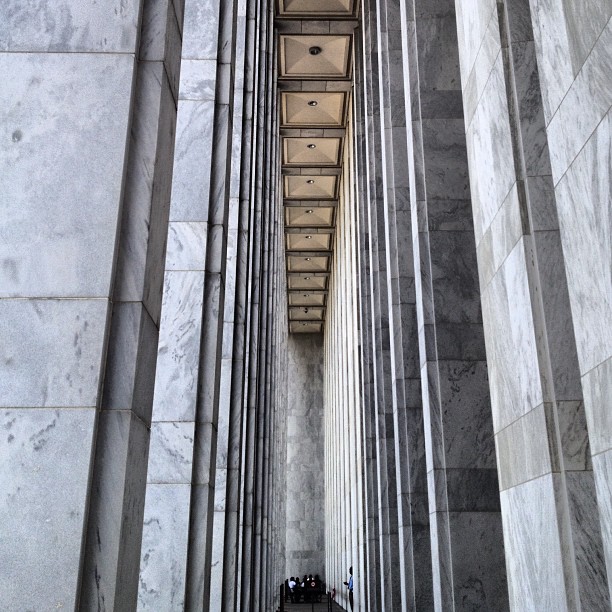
Library of Congress Madison Building entrance. #DC